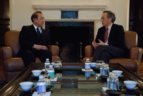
SecChuvisitsJapaneseEmbassy 143

Sec. Steven Chu meets with Japanese Ambassador to the United States, Ichiro Fujisaki.
(DOE: Quentin Kruger)